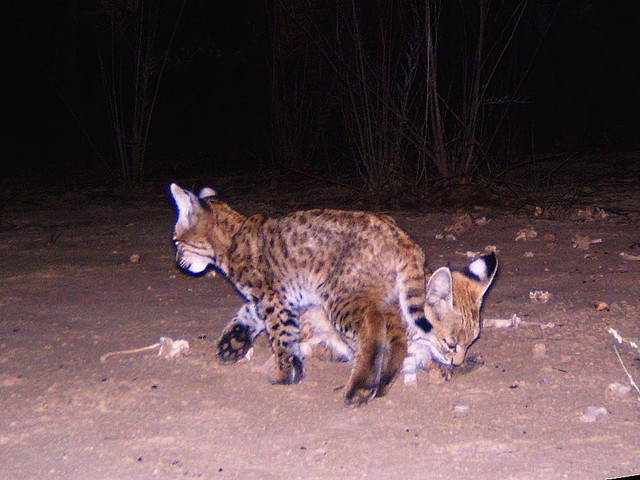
young bobcats

Bosque del Apache National Wildlife Refuge, NM
Camera trap project by Matt Farley, Jennifer Miyashiro, and J.N. Stuart.